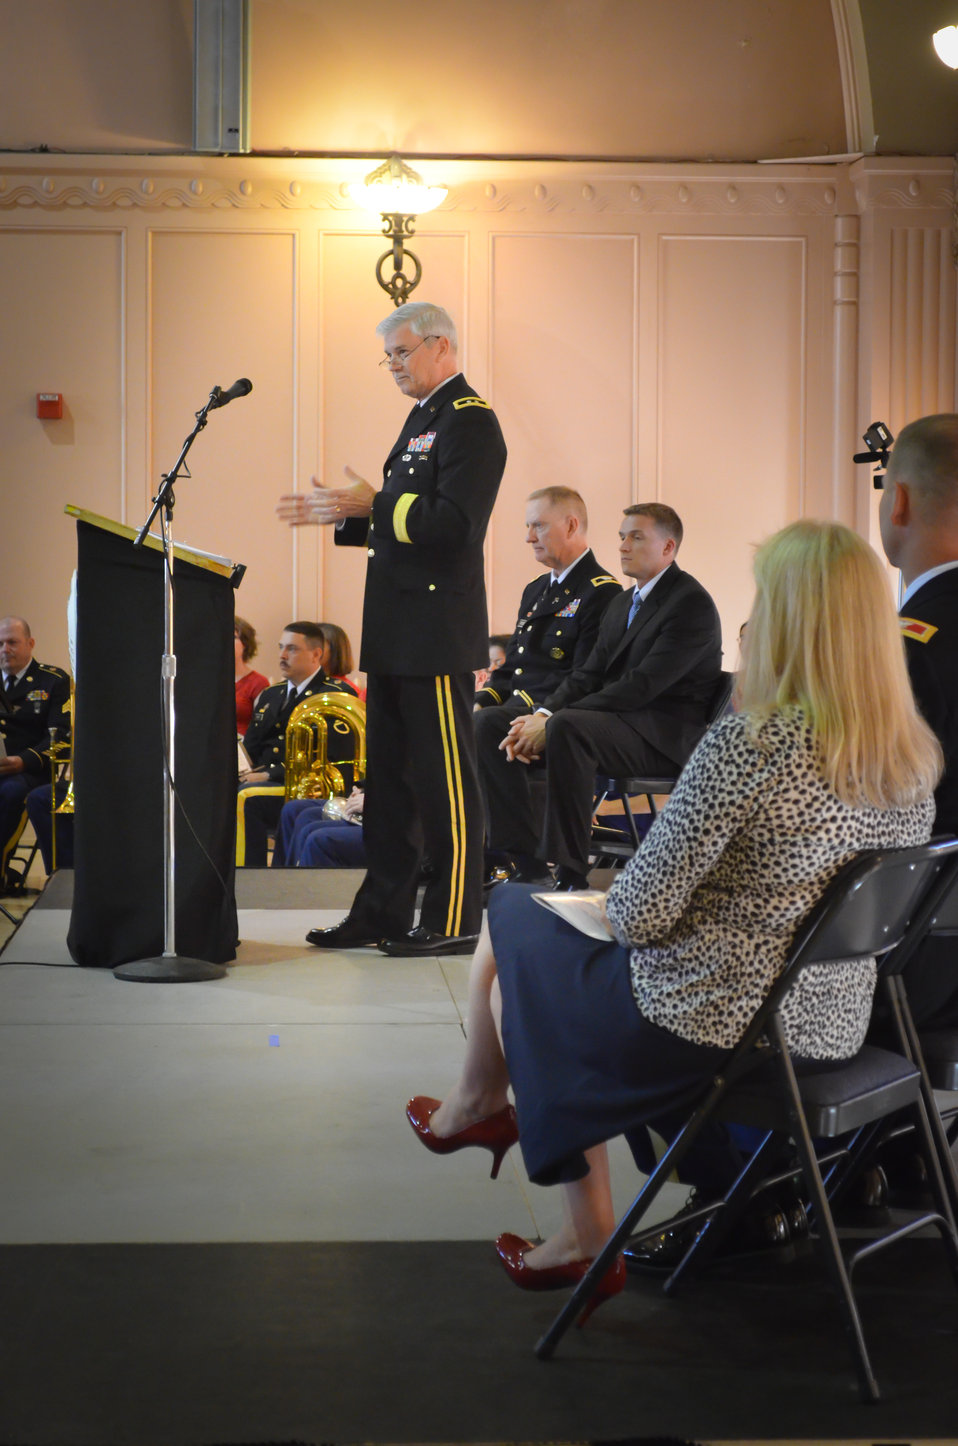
Major Gen. Walsh offers remarks

Major Gen. Michael J. Walsh, Deputy Commanding General for the U.S. Army Corps of Engineers Civil and Emergency Operations, offers remarks during the Sacramento District’s change of command ceremony July 10, 2013 at the Masonic Temple in Sacramento, Calif. Colonel Michael J. Farrell officially assumed command from Col. William J. Leady, and is the district’s 31st commander.